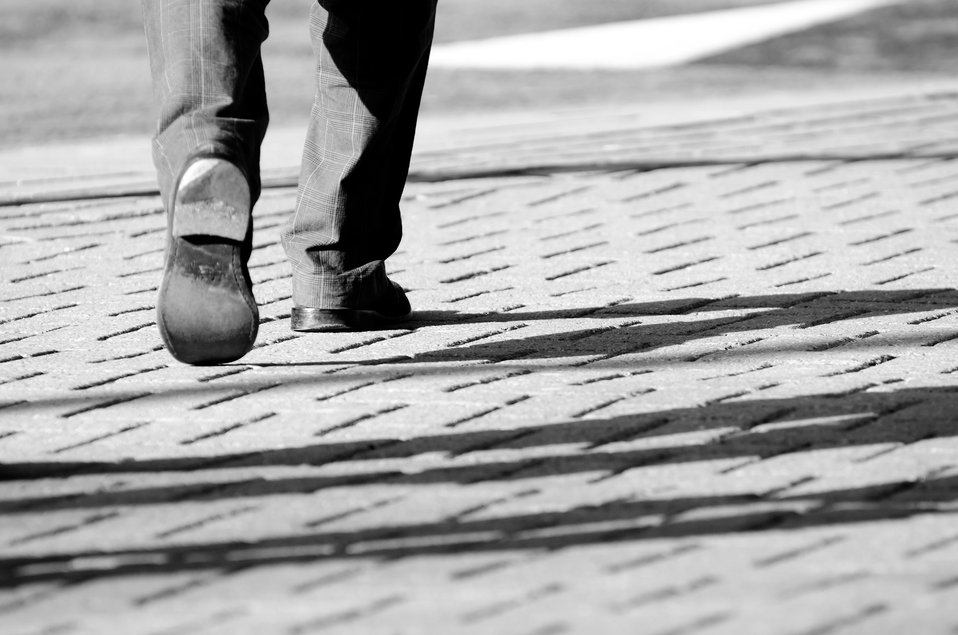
Steps - black and white.